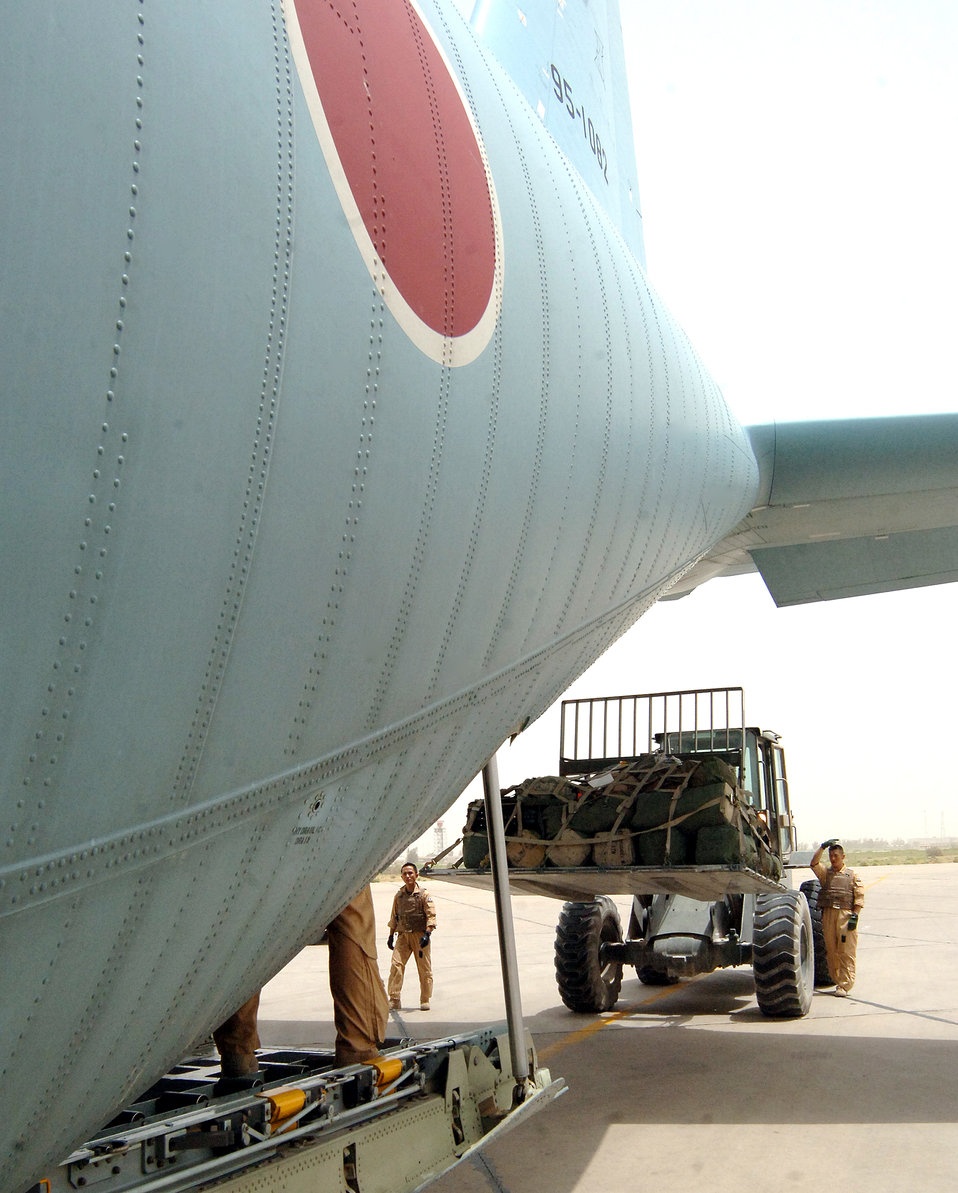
Japanese C-130 lands at Sather

An airman from the Japan Air Self Defense Force stands outside his C-130 on the ramp at Sather Air Base, Iraq, on July 31. This marked the first time a Japanese C-130 had landed at Sather on Baghdad International Airport. The Japanese are now flying into Sather on a regular basis.